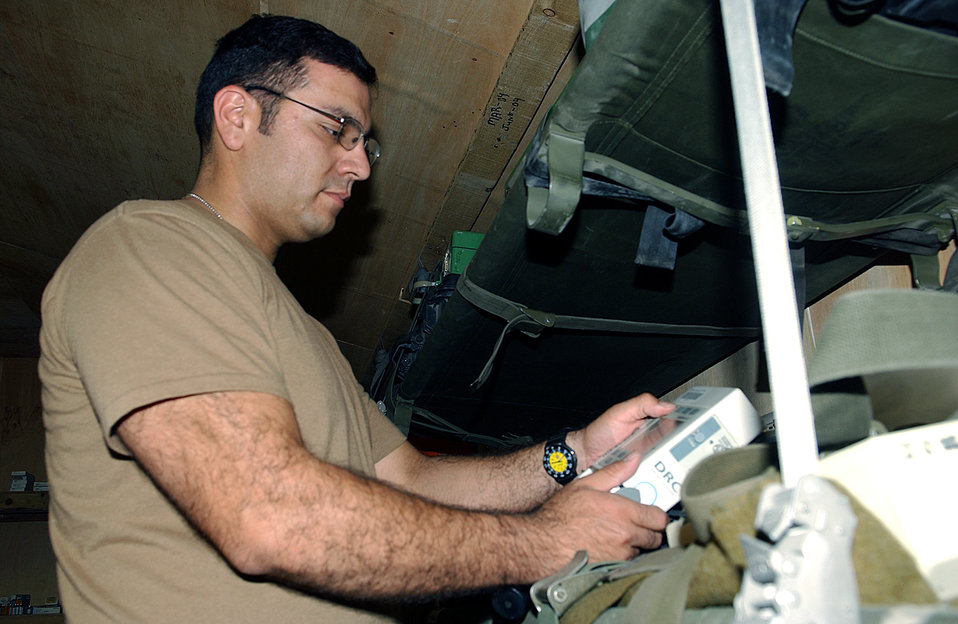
Taking care of patients in the air

BAGRAM AIR BASE, Afghanistan -- Tech. Sgt. Gabrial Aguilar tests an IV pump before inventorying it for a flight. The pump is used to run intravenous fluids to a patient while in flight. Sergeant Aguilar is assigned to the 376th Expeditionary Aeromedical Evacuation Squadron here. He is deployed from the 349th Aeromedical Evacuation Squadron at Travis Air Force Base, Calif.